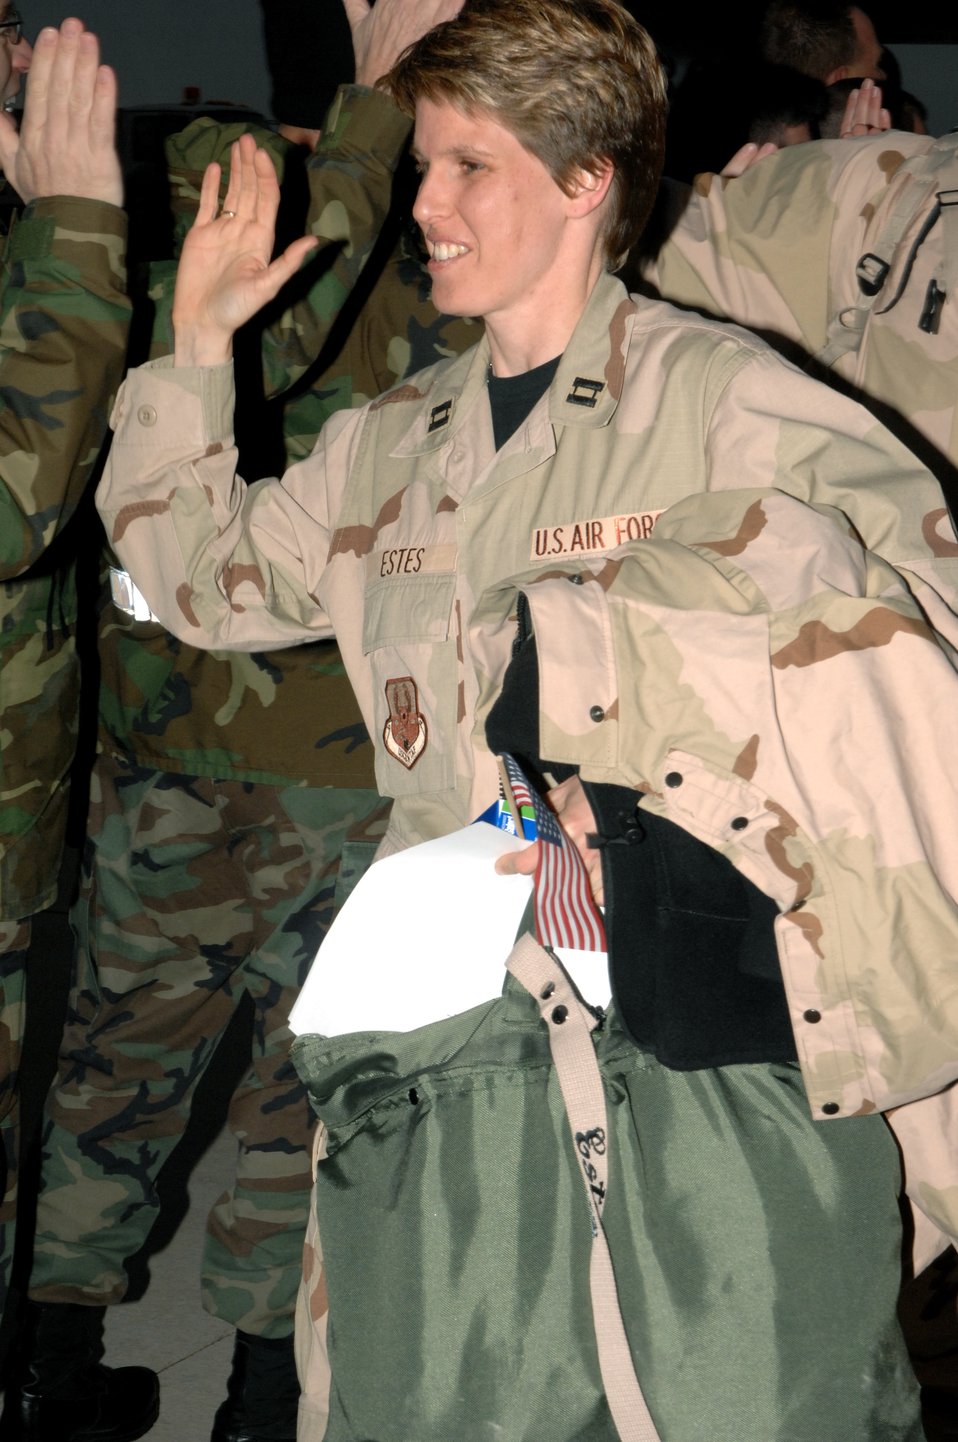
Welcome home

Capt. Michelle Estes gets a high five welcoming her home from her deployment Jan. 18 at Cannon Air Force Base, N.M. Captain Estes and other Airmen from Cannon AFB were serving in Iraq. Captain Estes is assigned to the 27th Aircraft Maintenance Squadron.